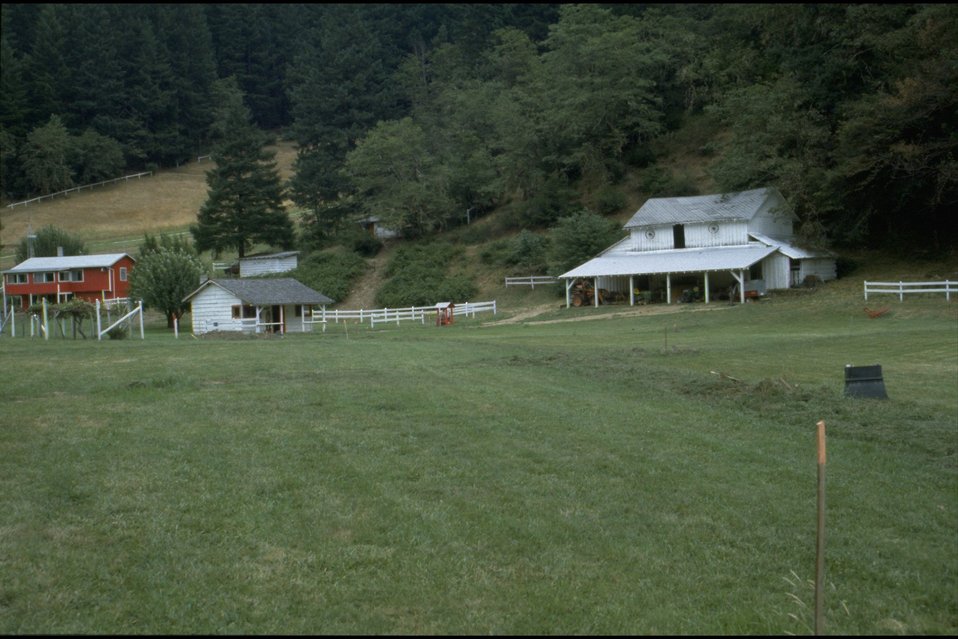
Rouge River Ranch - (left-to-right) Caretaker's (red) house, (white) Tack House, and (white) barn.